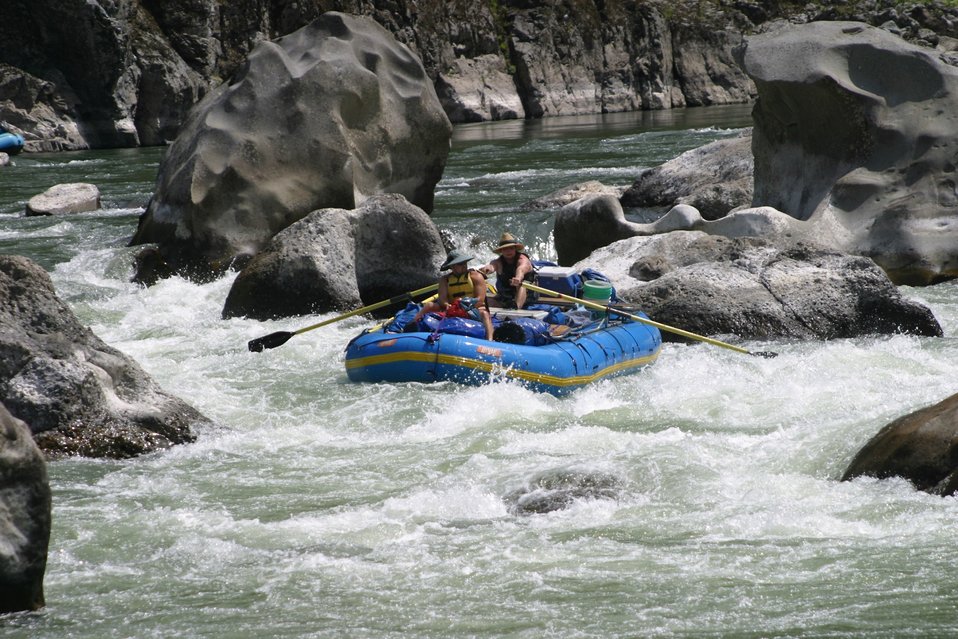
Wild section of the Rogue River from Grave Creek to Foster Bar May 19 to May 22.